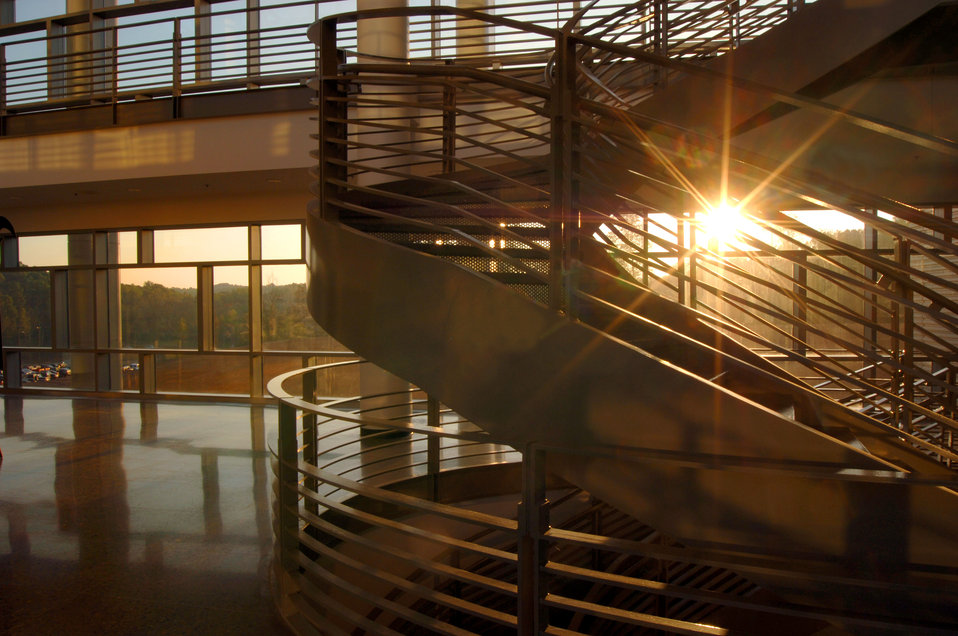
Interior of Spallation Neutron Source

05-277-32 DOE photo by Lynn Freeny

Oak Ridge National Lab Oak Ridge Tennessee
10-5-2005